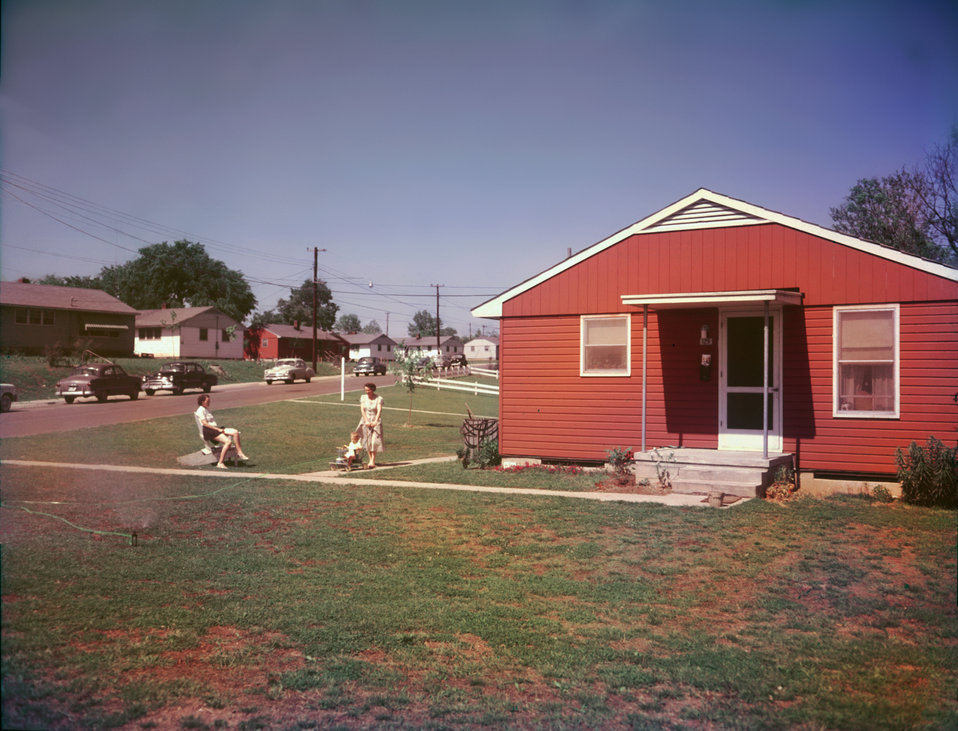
Oak Ridge neighborhood 1950s

DOE photo by Ed Westcott Oak Ridge Tennessee 1950s